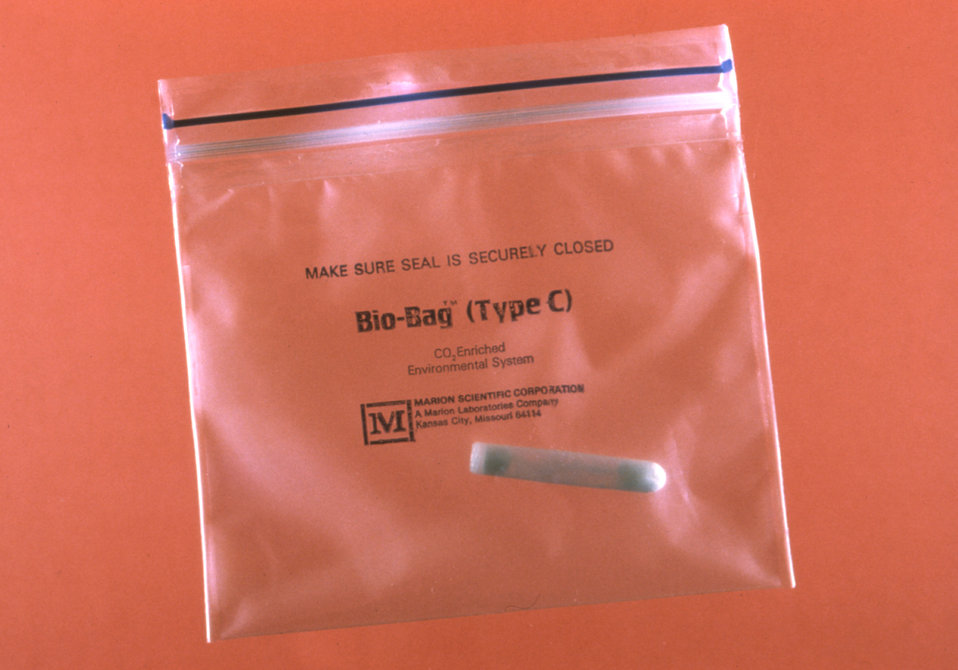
This is a Bio-Bag� (Type C) zip lock bag made by Marion Scientific Corporation with a CO2 generator.